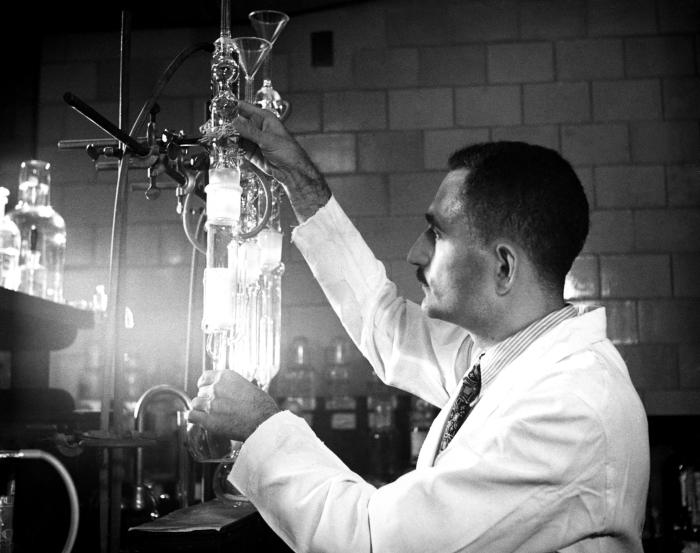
This November, 1943 photograph was provided by the Center for Disease Control's (CDC), National Institute for Occupational Safety and Health (NIOSH). Inside a laboratory setting, this image depicted a doctor who was in the process of extracting various dissolved constituents from solutions under analysis, using organic solvents to accomplish this task. It is not know which solvents were being used, or what was to be extracted, but many solvents are toxic, and are known carcinogens. However, you'll note that this man was wearing no protective garments such as a filtered breathing mask, goggles, or gloves, which would have protected him from airborne or spilt contaminants.